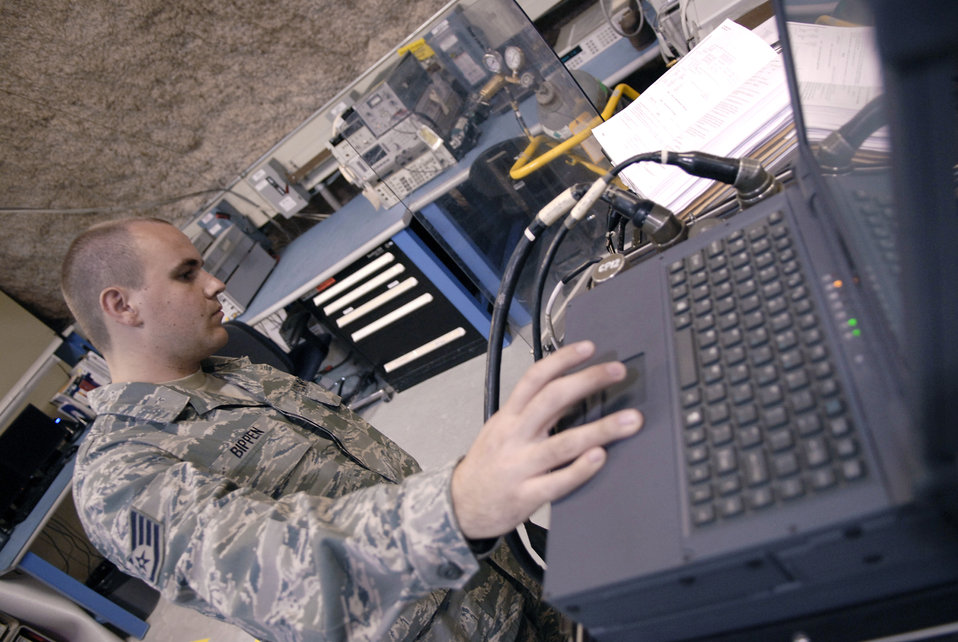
Airmen calibrate for mission success

Staff Sgt. Ryan Bippen runs the self test calibration for a weapon guidance system June 15 at an air base in Southwest Asia. Sergeant Bippen ensures the equipment can run its own tests before he begins to run calibrations. Sergeant Bippen is a 379th Expeditionary Maintenance Squadron Precision Measurement Equipment Laborartory technician. He is a native of San Francisco and is deployed from Mountain Home Air Force Base, Idaho.